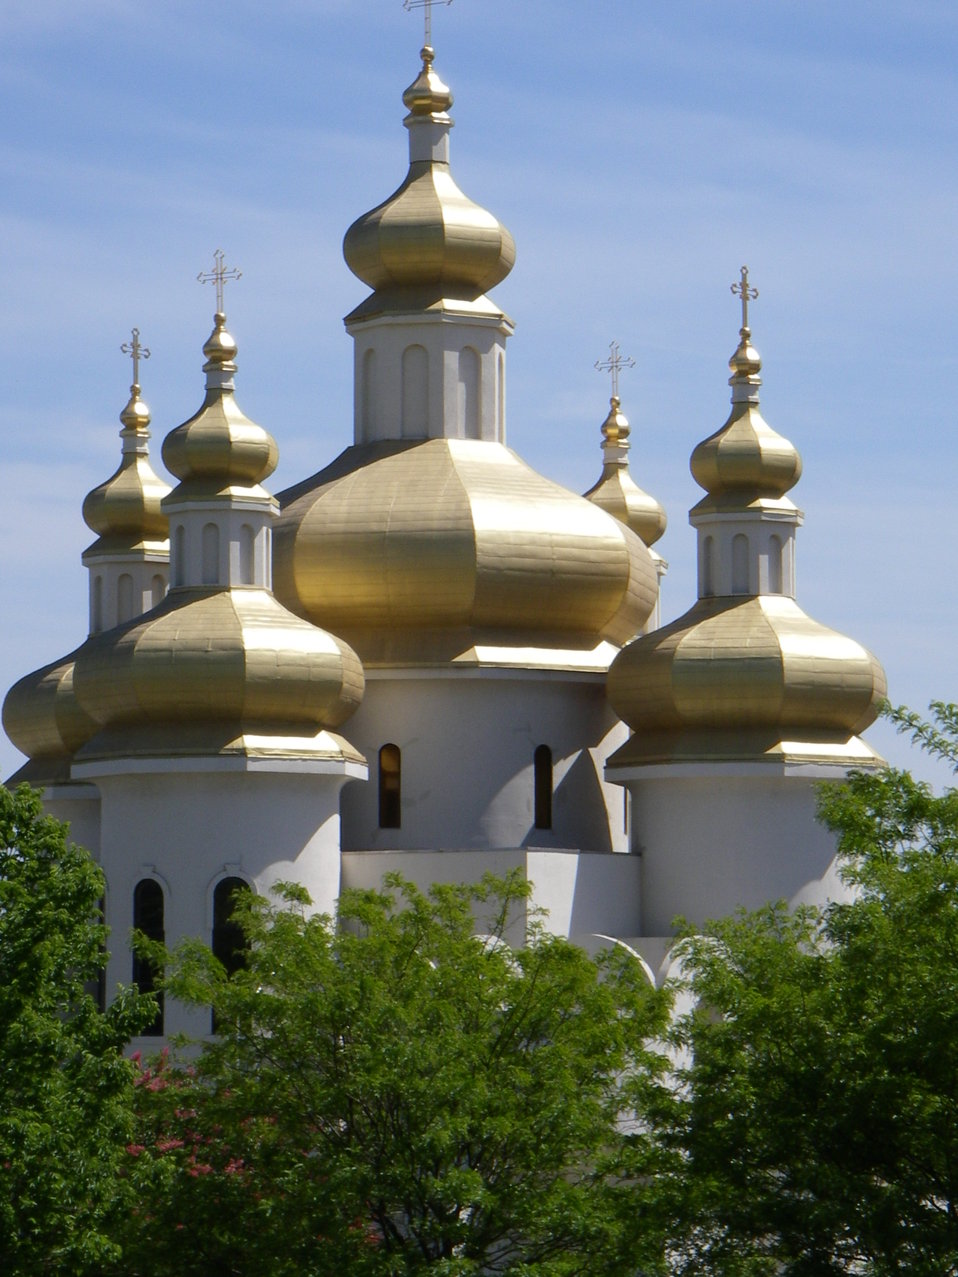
Domes of St. Michael's Russian Orthodox Church in Baltimore.